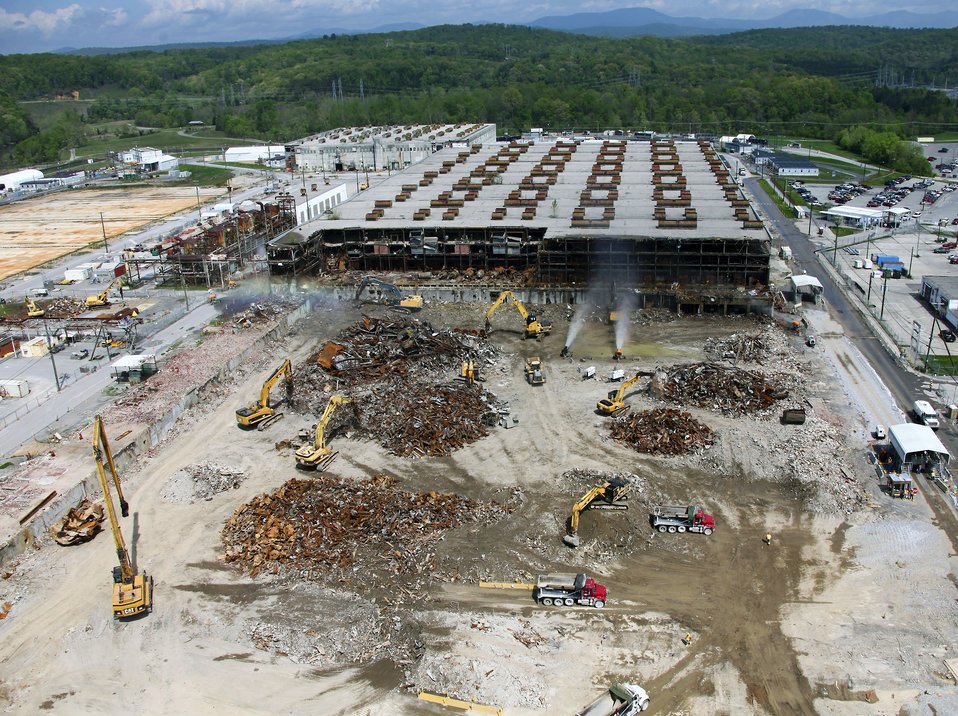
Demolition Progress at Oak Ridge